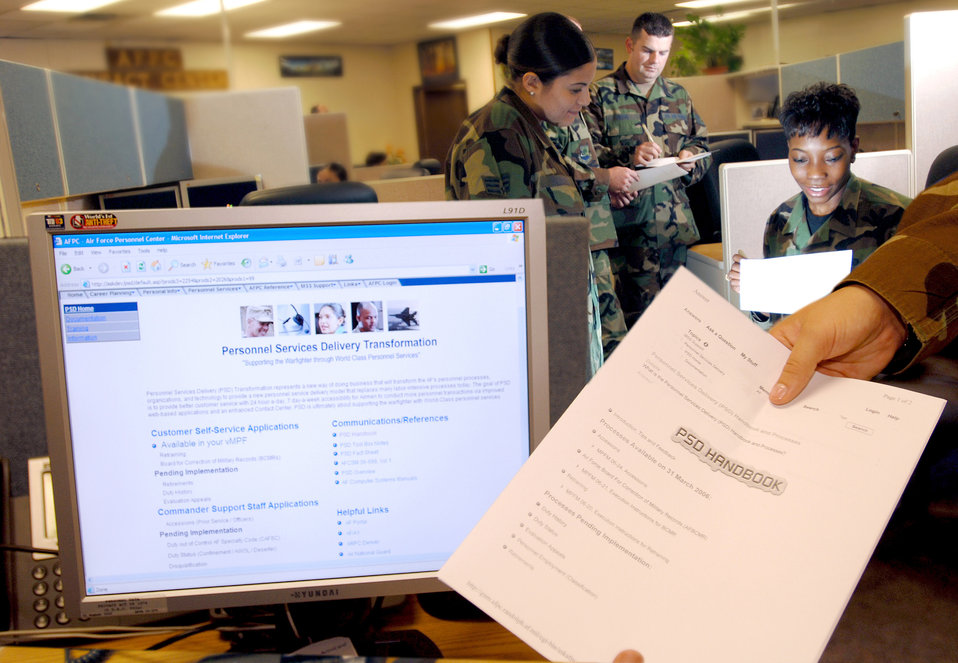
Personnel Services Delivery System initiative begins

Senior Airman Ashley Thomas and Staff Sgts. Jason Picos and Shamonn Castor of the Air Force Personnel Center's contact center discuss the implementation of the new Personnel Service Delivery system at Randolph Air Force Base, Texas, Friday, March 31, 2006.